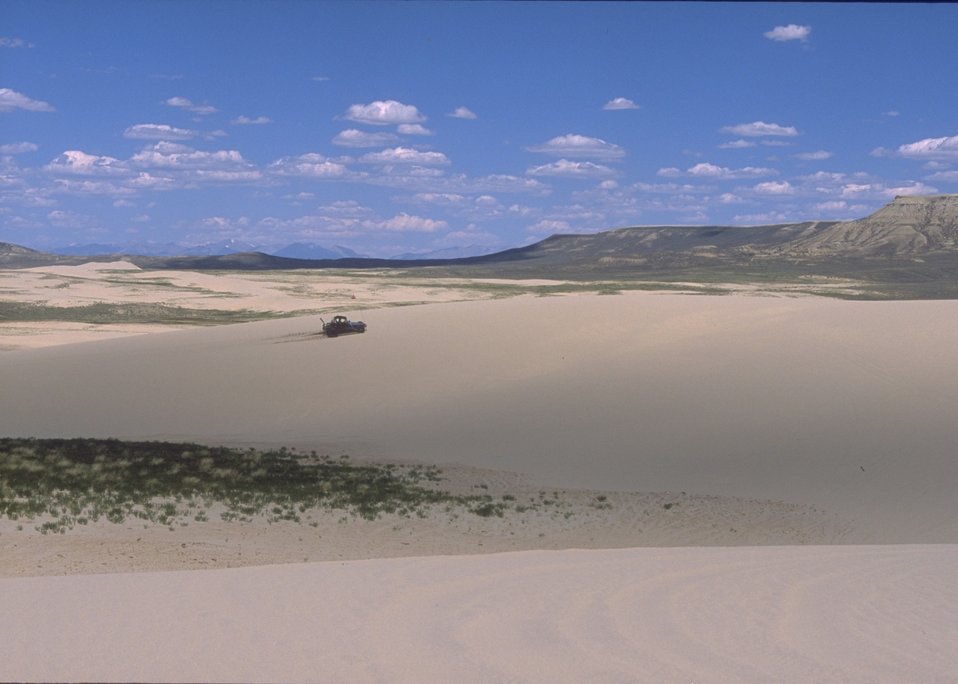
Sand Dunes OHV Area, Rock Springs Field Office.